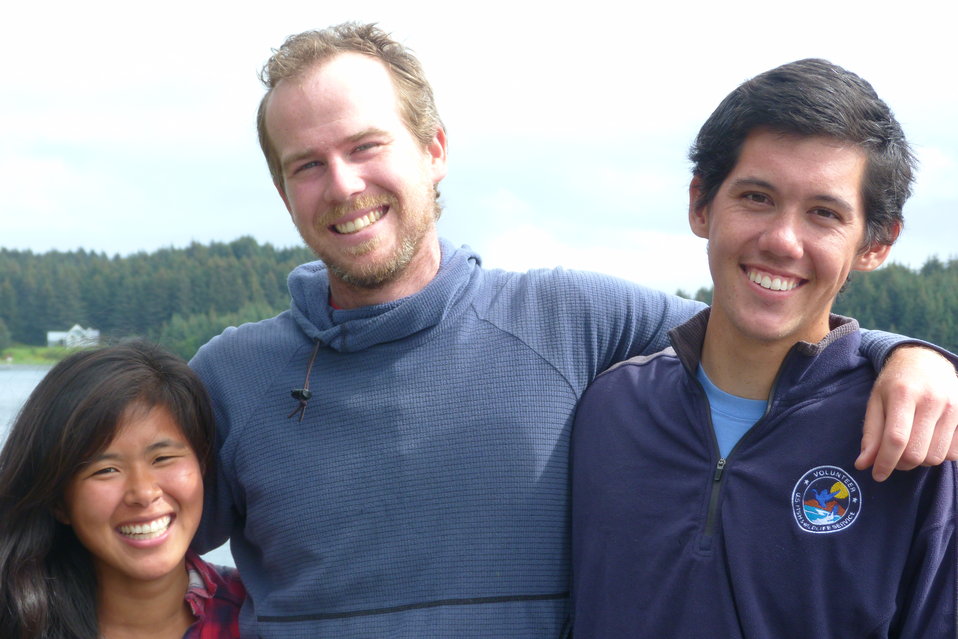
2012 brown bear research volunteers

Photo Credit: USFWS
Source: Kodiak NWR